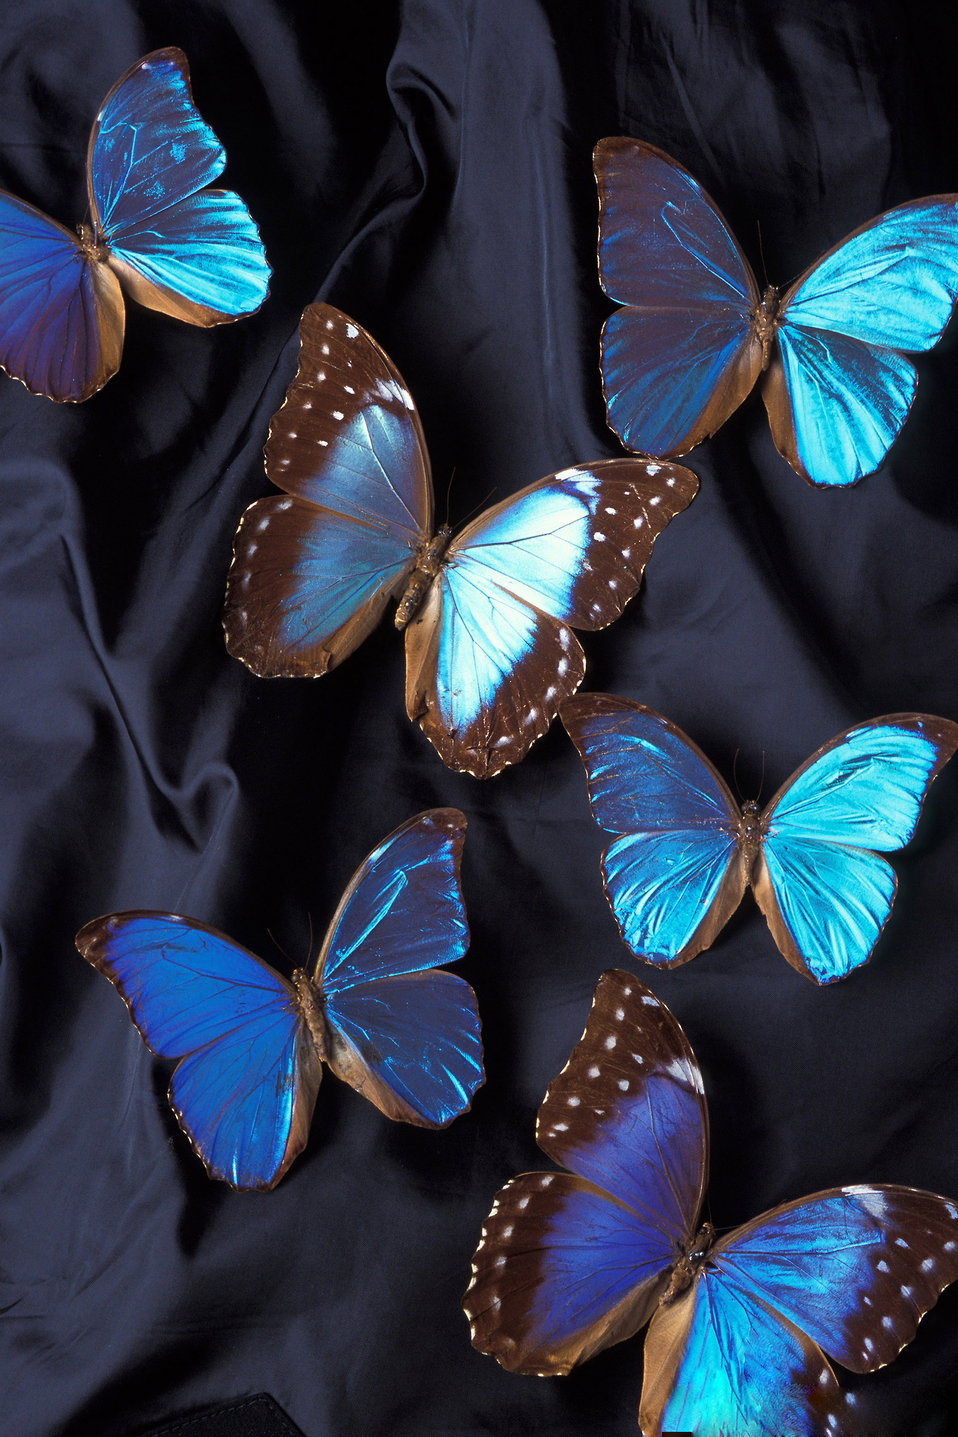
Adult Morpho butterflies cluster together. Butterflies are one of nature’s many pollinators for flowers and crops and are crucial in production for fruits and vegetables.